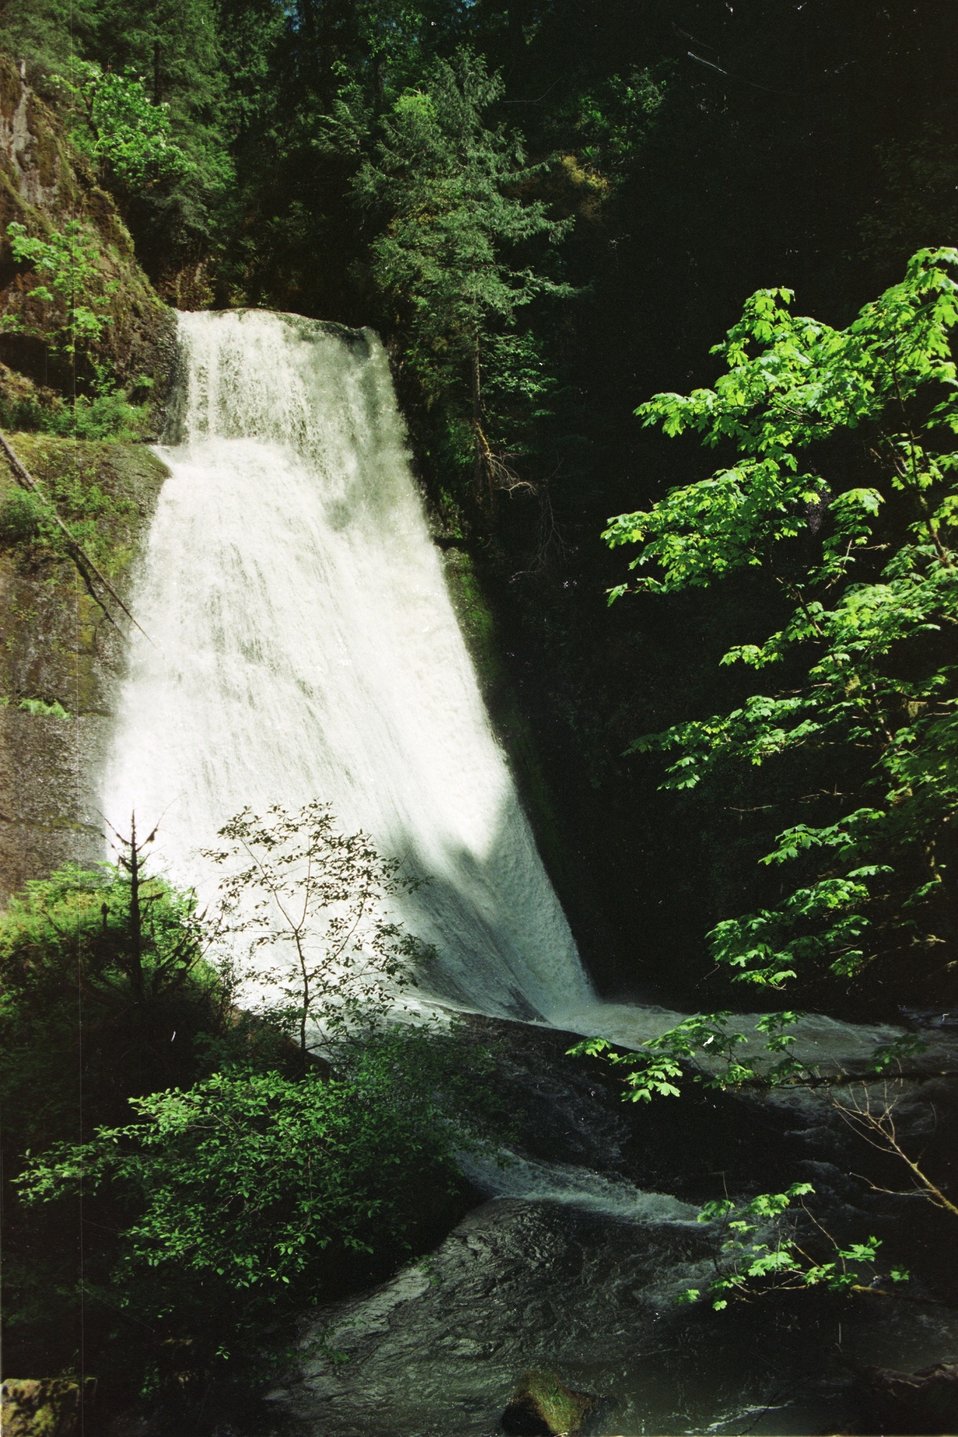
Upper Wolf Creek Falls (Full Level Flow).